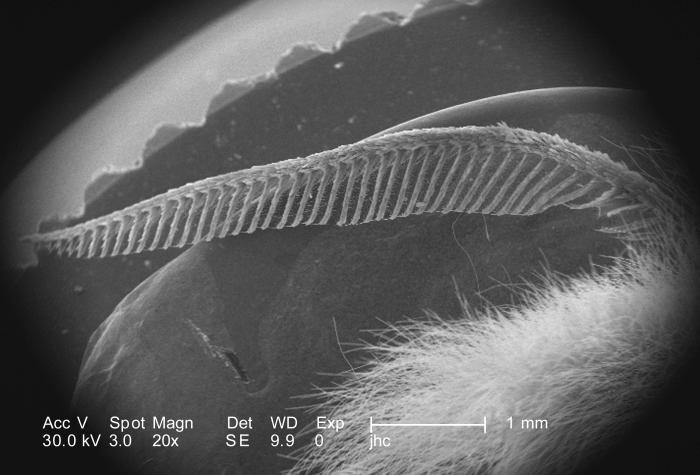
Under a low magnification of 20X, this scanning electron micrograph (SEM) revealed some of the ultrastructural morphology located on the head region of an unidentified white moth, which had been found deceased on the ground in the suburbs of Decatur, Georgia. Note the 'fern-like', antenna, which was one on the two emanating from the insect's head region. What appeared to be 'hair', was not hair at all, but a tuft of sensory structures known as 'setae', and are composed of the same material, known as chitin, as the rest of this organism's exoskeleton.